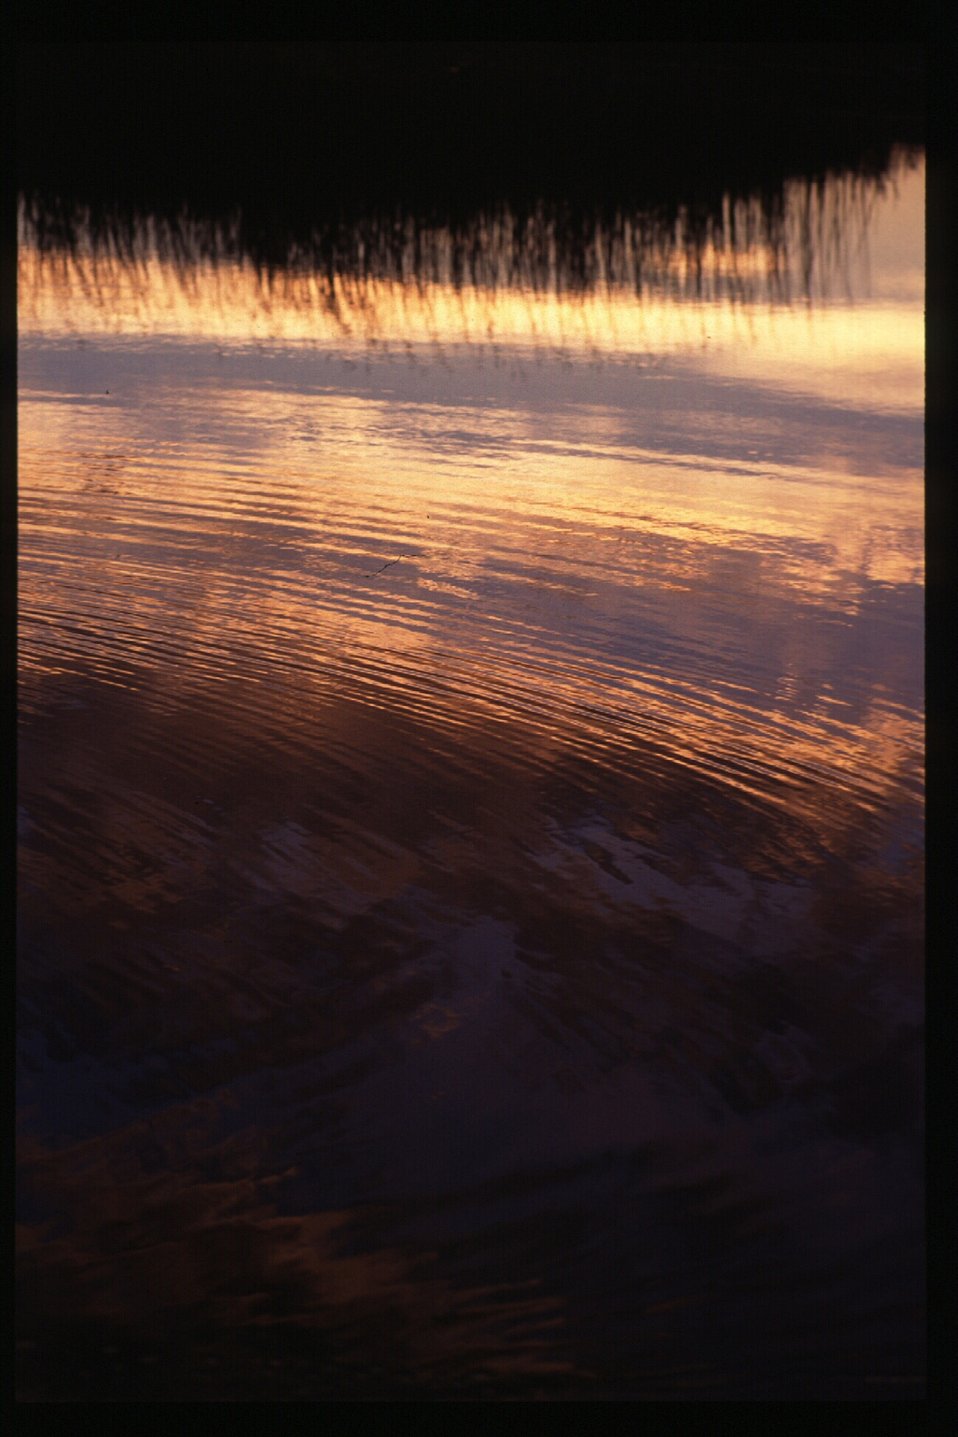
Recreation St Anthony Sand Dunes Off Highway Vehicles Idaho Falls Field Office USRD Upper Snake River District